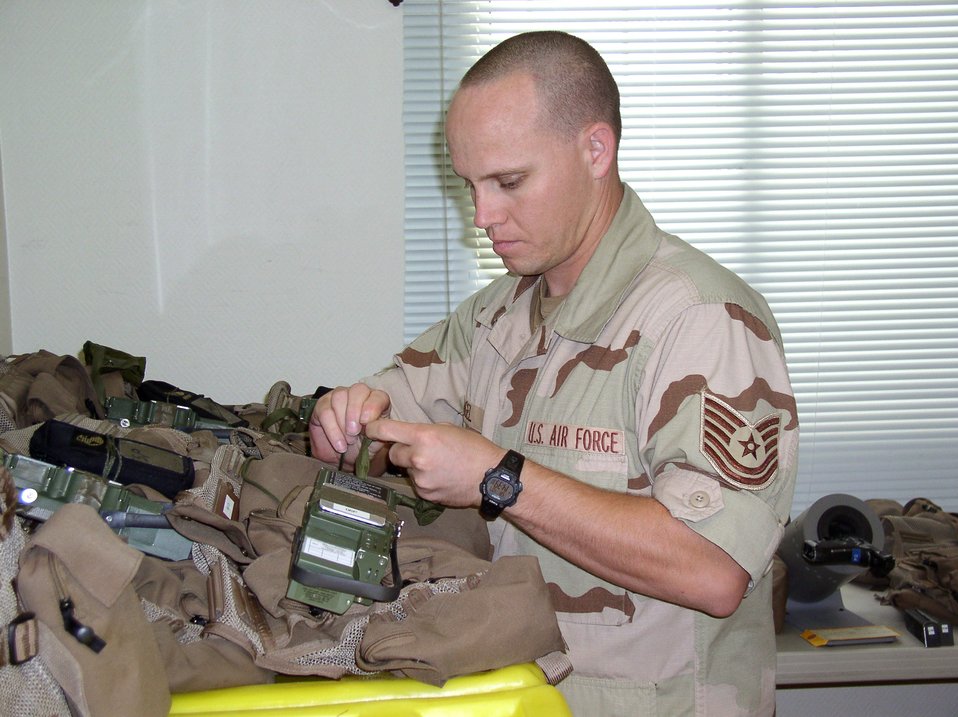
Aircrew support

Life support specialist Tech. Sgt. Theodore Angel inspects the survival vest for one of his aircrew members in preparation for a combat mission on Saturday, July 1. Sergeant Angel, assigned to Seymour Johnson Air Force Base, N.C., is deployed to the 335th Expeditionary Fighter Squadron in Southwest Asia.